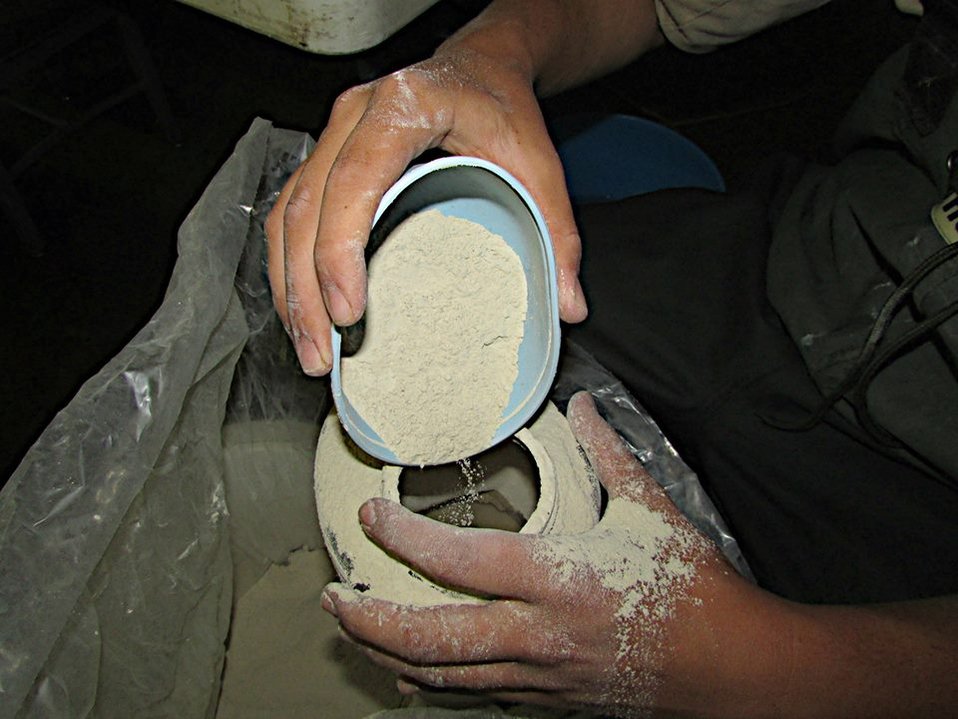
Hollywood at the Hatchery

When spawning paddlefish and pallid sturgeon, we stir the eggs in a bowl with muddy water. This is essential to keep the eggs from sticking together and it simulates what they would experience in the wild.

We use Fuller's earth to get the perfect texture for the muddy water. This is the same powder that is used in movies to create sandstorms and dramatize explosions.